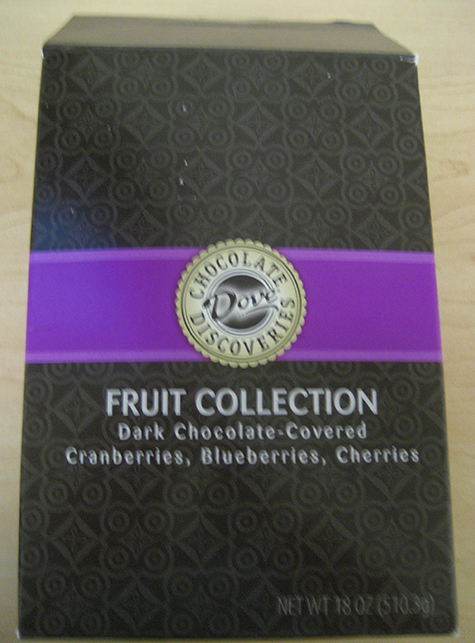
RECALLED – Dark Chocolate-Covered Fruit Collection

August 24, 2013 – Product Recall – Dove Chocolate Discoveries Issues Allergy Alert on Undeclared Nuts in Dark Chocolate Covered Fruit Collection Box.